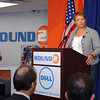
2011-07-20eWasteAustin007-Ti